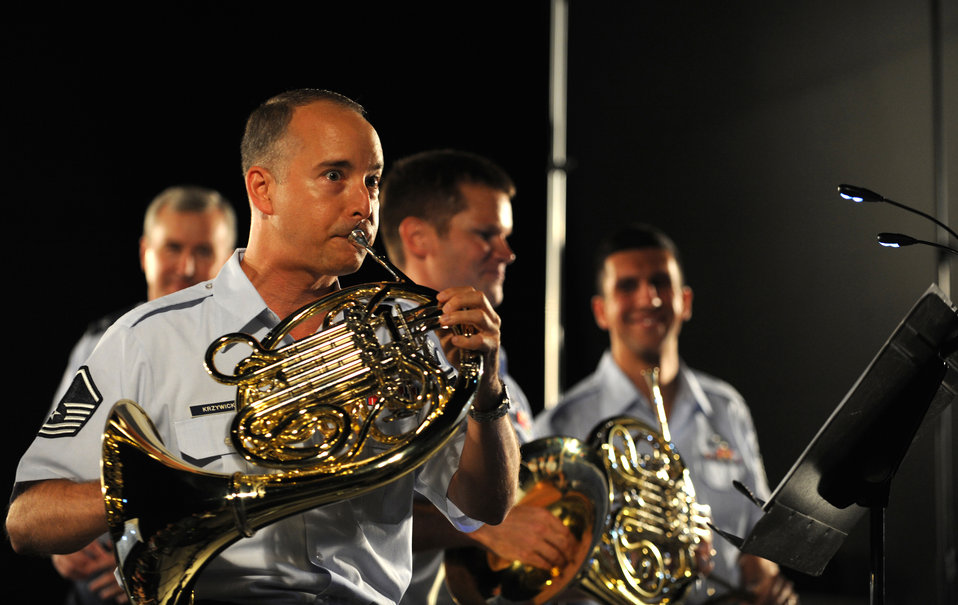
Air Force Band

A U.S. Air Force band member plays the French horn during a concert held at the Air Force Memorial on August 24, 2012 in Washington D.C. Throughout the summer months of June, July, and August, the band's performing ensembles present free outdoor concerts at historic venues in our nation's capital for Washington area residents, as well as for visitors from around the world.